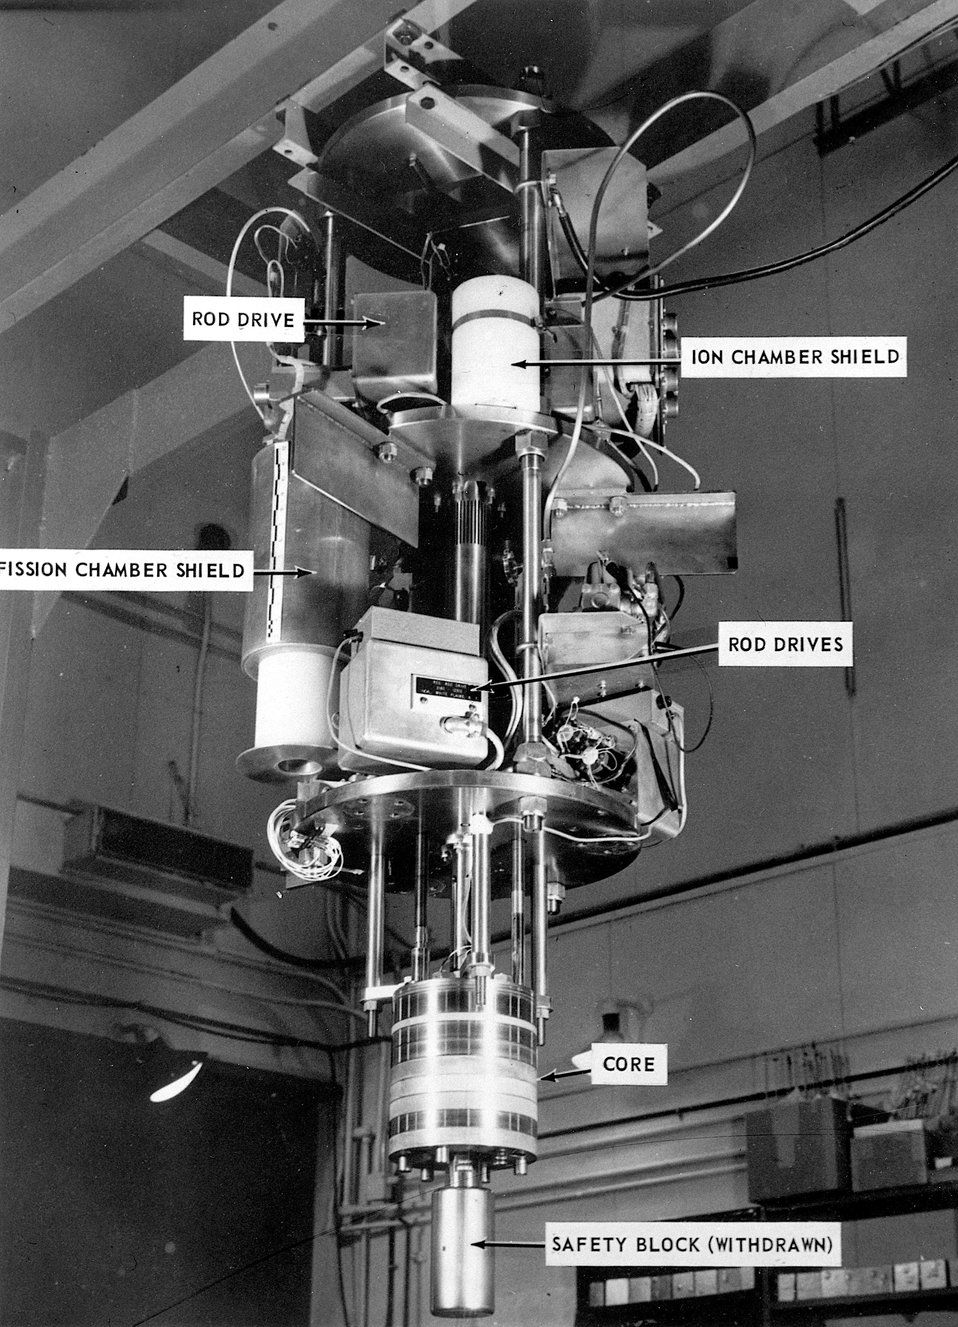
For conducting the early 1962 portion of the BREN studies, the new Health Physics Research Reactor was used as a source of gamma rays and neutrons at the Nevada Test Site. c. 1963